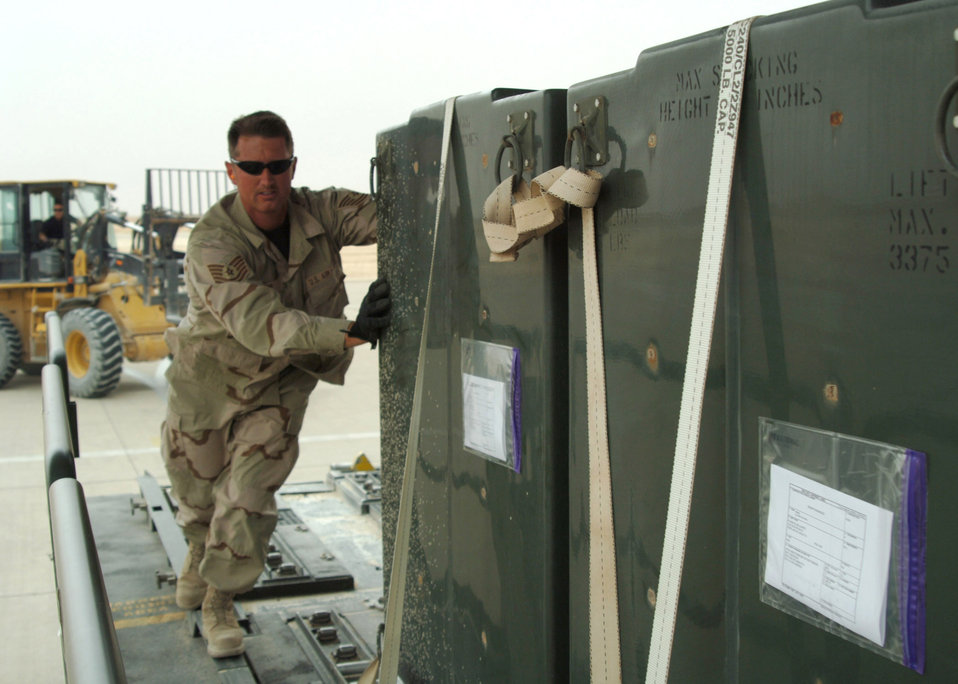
Aerial porters saving countless lives moving air cargo in Iraq

Tech. Sgt. Scott Wilson loads cargo pallets onto a C-130 Hercules from Pope Air Force Base, N.C., April 21 at Al Asad Air Base, Iraq. Since January, 438th Aerial Port Flight Airmen have processed more than 32,000 passengers, 15,528 tons of cargo and more than 2,600 aircraft, keeping nearly 12,000 American servicemembers off the roads in convoys.